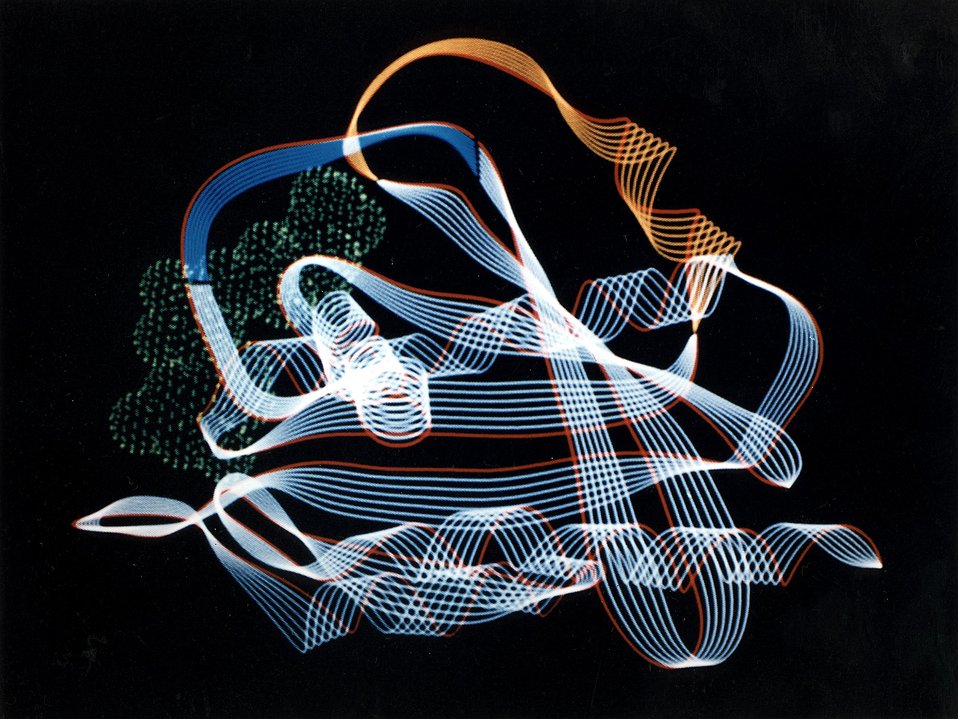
Normal Protein of Oncoprotein: This computer-generated image shows the structural backbone of the normal gas protein, as determined by x-ray diffraction studies.